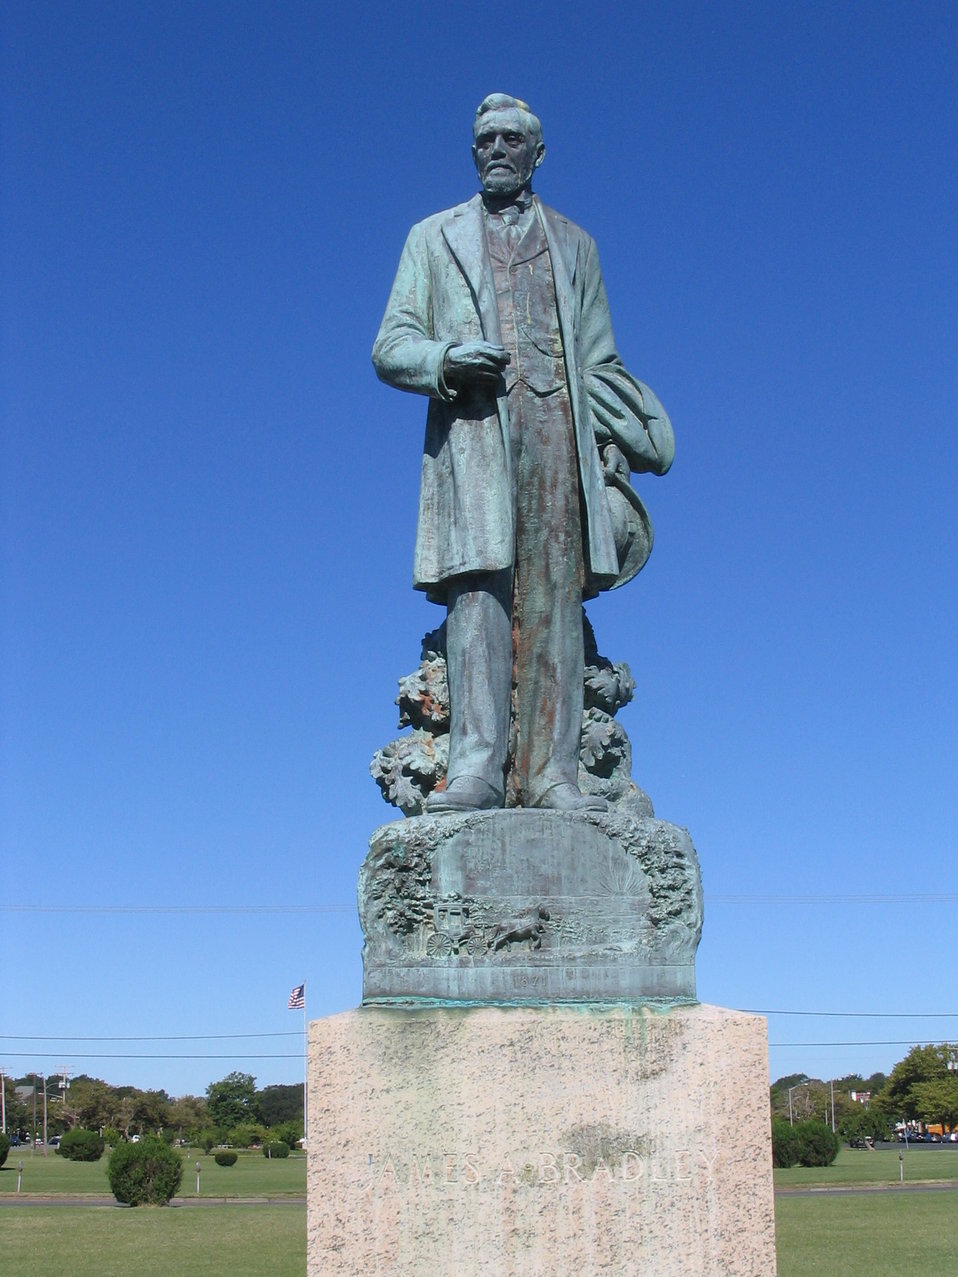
Statue of James A. Bradley in Bradley Park, Asbury Park NJ.